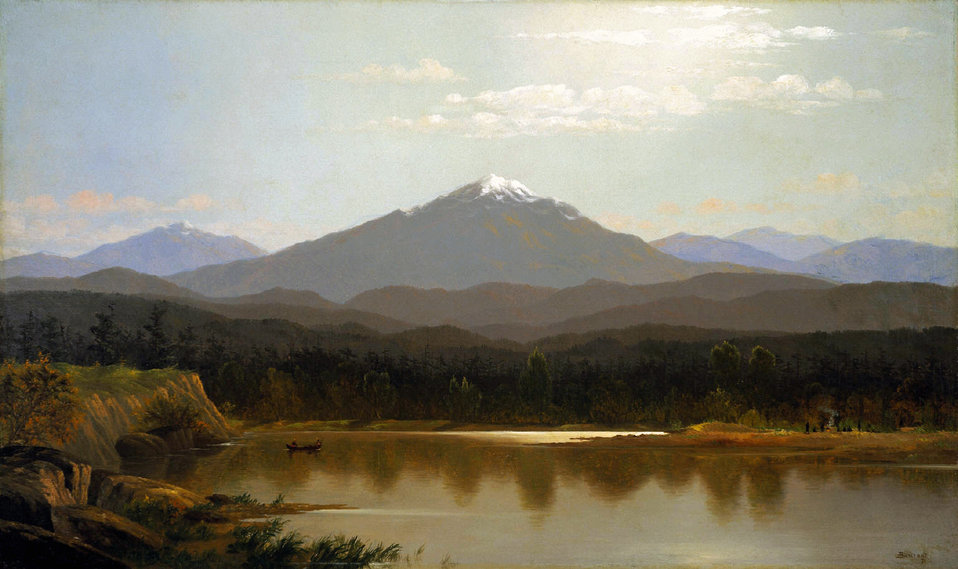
Albert Bierstadt - Laramie Peak